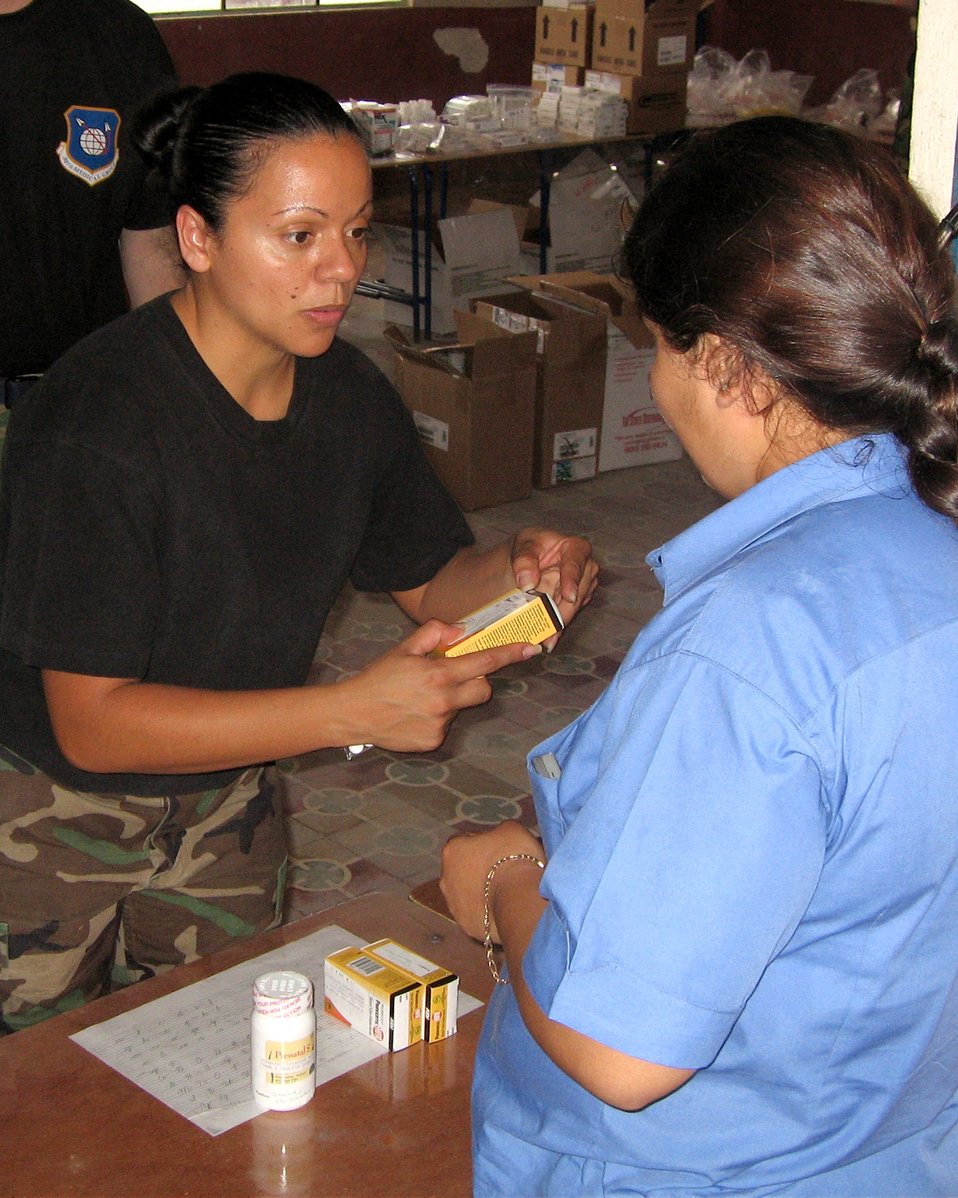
Air Force medics provide medical relief in Guatemala

Staff Sgt. Nilsa Ramos, a pharmacy technician from Patrick Air Force Base, Fla., dispenses medicine to a Guatemalan woman during a 10-day humanitarian mission to the area in April. A team of 13 medical professionals from Air Force Space Command saw more than 8,000 patients during that time.